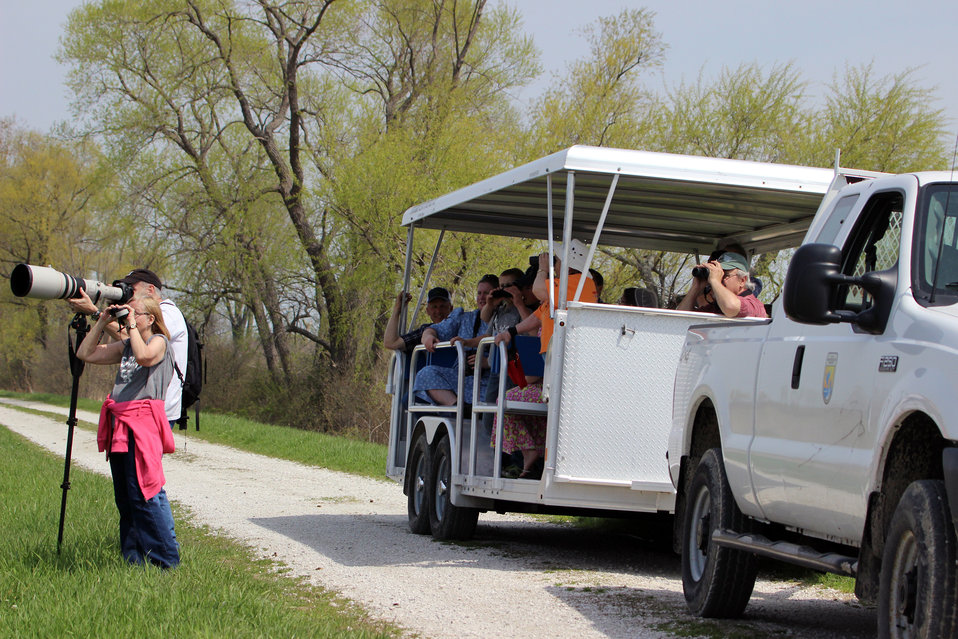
Bird Watching